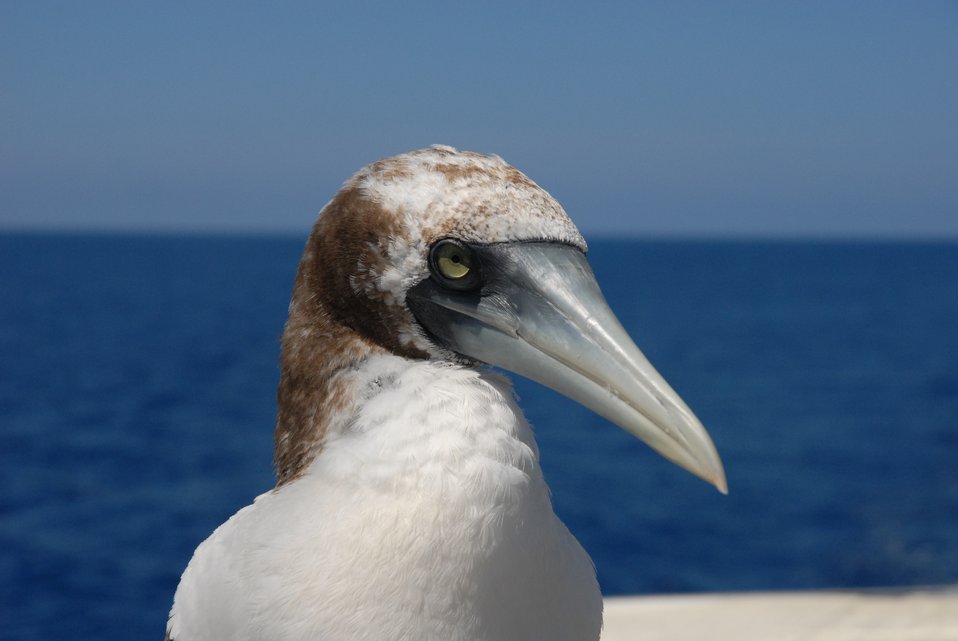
Booby up close and personal.